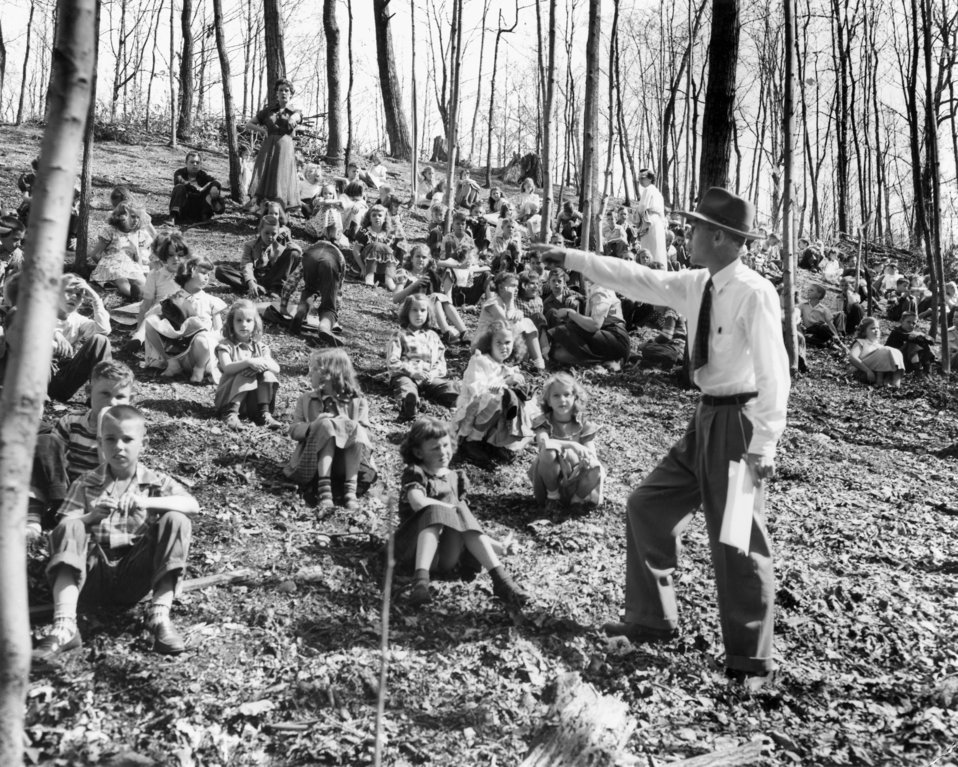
Civil Defense Air Raid Drill Oak Ridge 1953

8934-17 DOE photo H.P. Tarver 4-9-1953 Highland View School Oak Ridge Tennessee